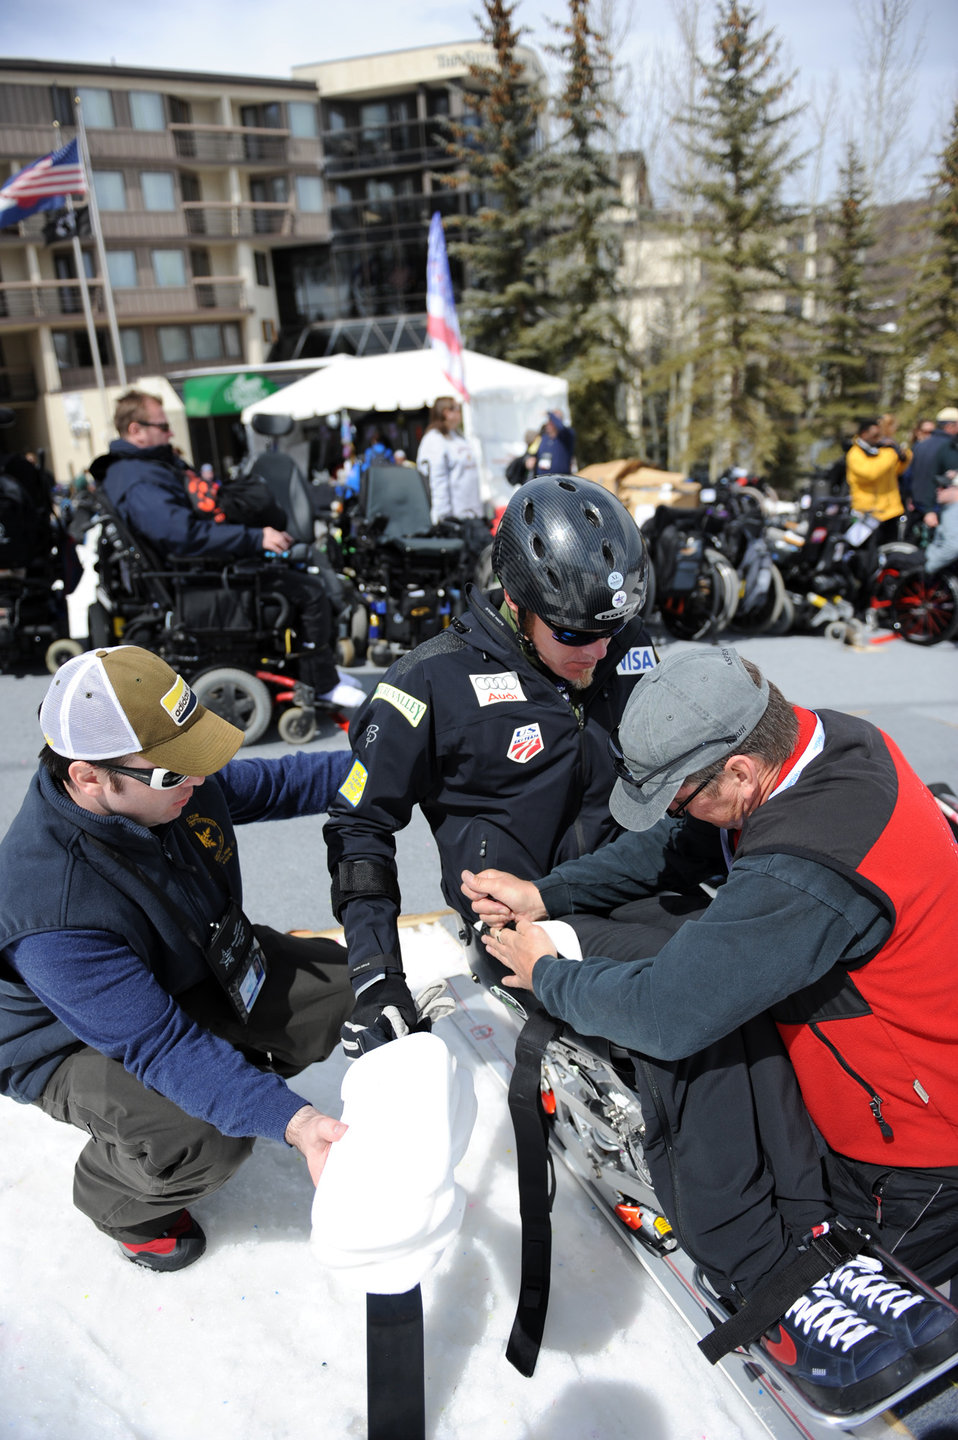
An Air Force veteran’s story: From combat controller to Paralympian

Sean Halsted gets strapped into a mono-ski outside The Silvertree Hotel for the 24th National Disabled American Veterans Winter Sports Clinic March 30, 2010, in Snowmass Village, Colo. Mr. Halsted is an Air Force veteran and resides in Rathdrum, Idaho. The event is sponsored by the Department of Veterans Affairs and Disabled American Veterans.